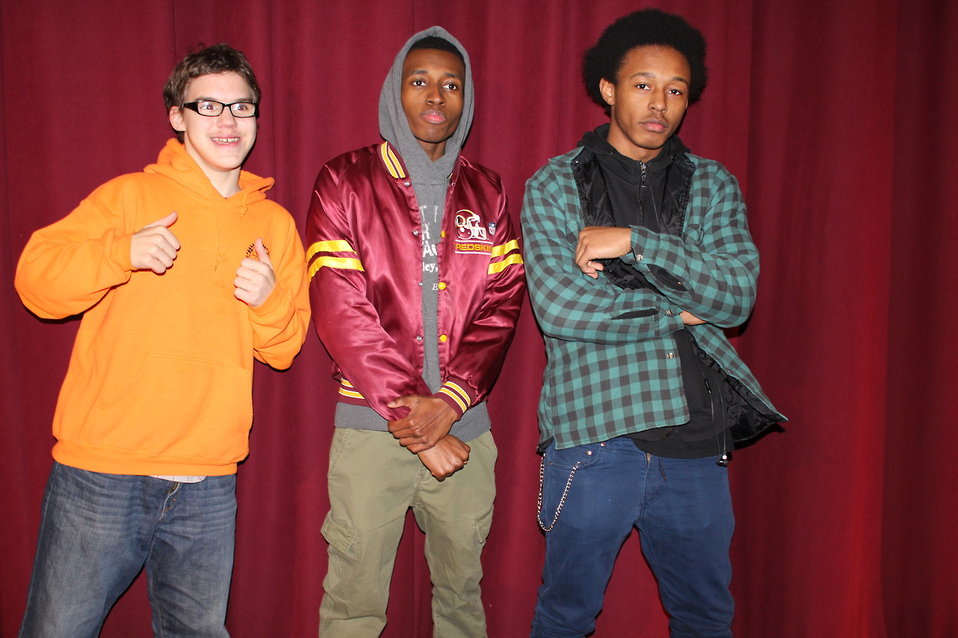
Youth Empowerment Program Poetry Slam held at Alternatives on Jan. 30 which was held to observe National Drug Facts Week and support youth in making healthy lifestyle choices.